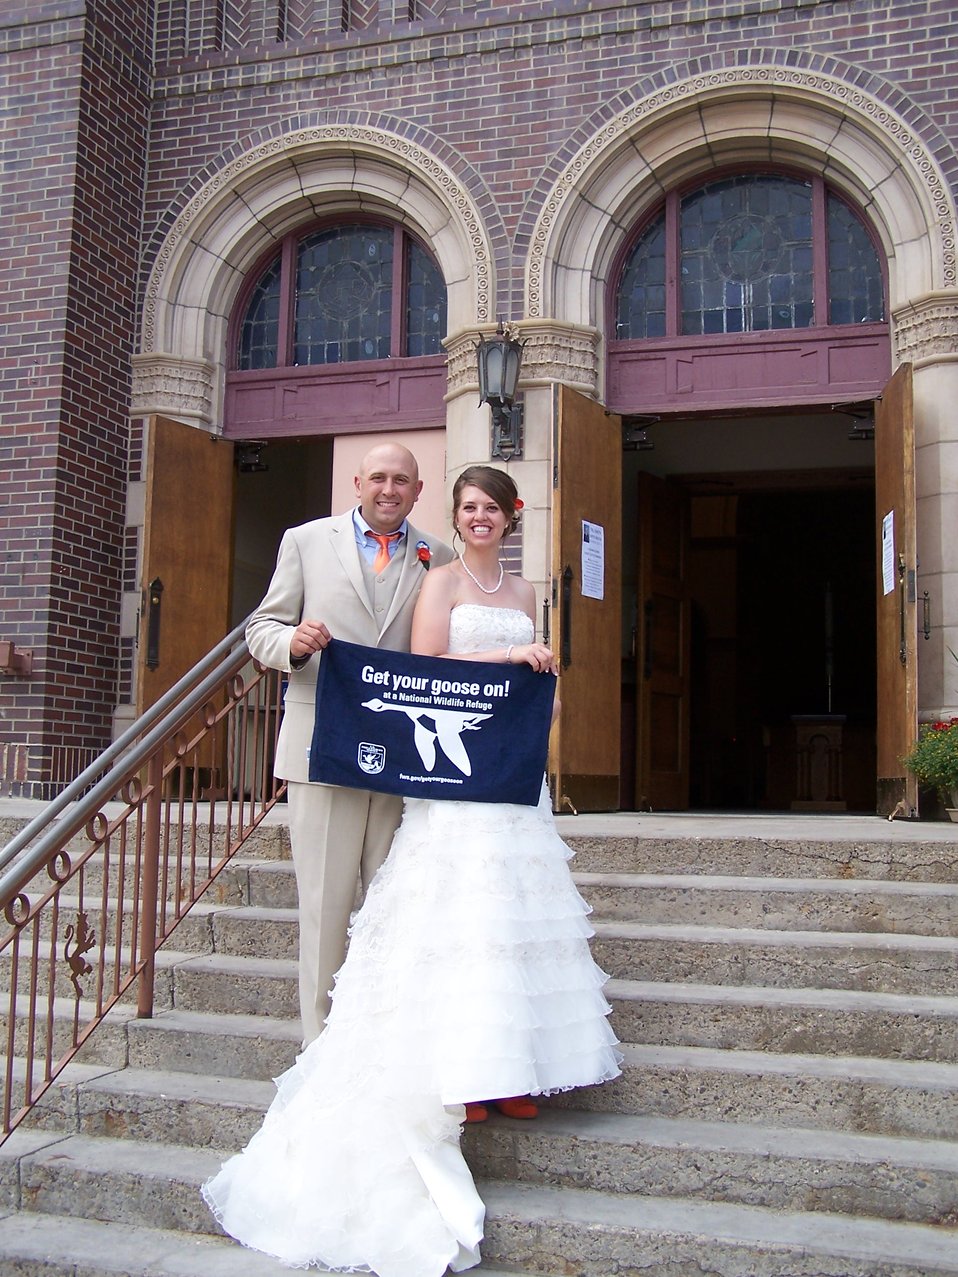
Get Your Goose On! - Holy Matrimony Style

Bowdoin's Fire Management Specialist Jim and his bride Katie Forsythe Get Their Goose On at their wedding